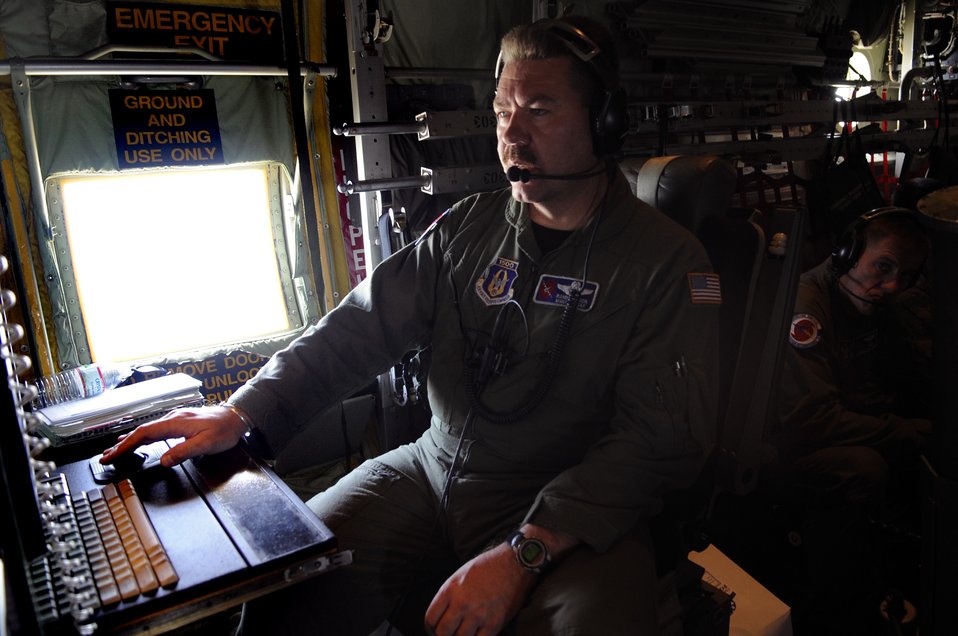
Bloggers Flight with the Hurricane Hunters

Master Sgt. Randy Bynon, onboard a WC-130J